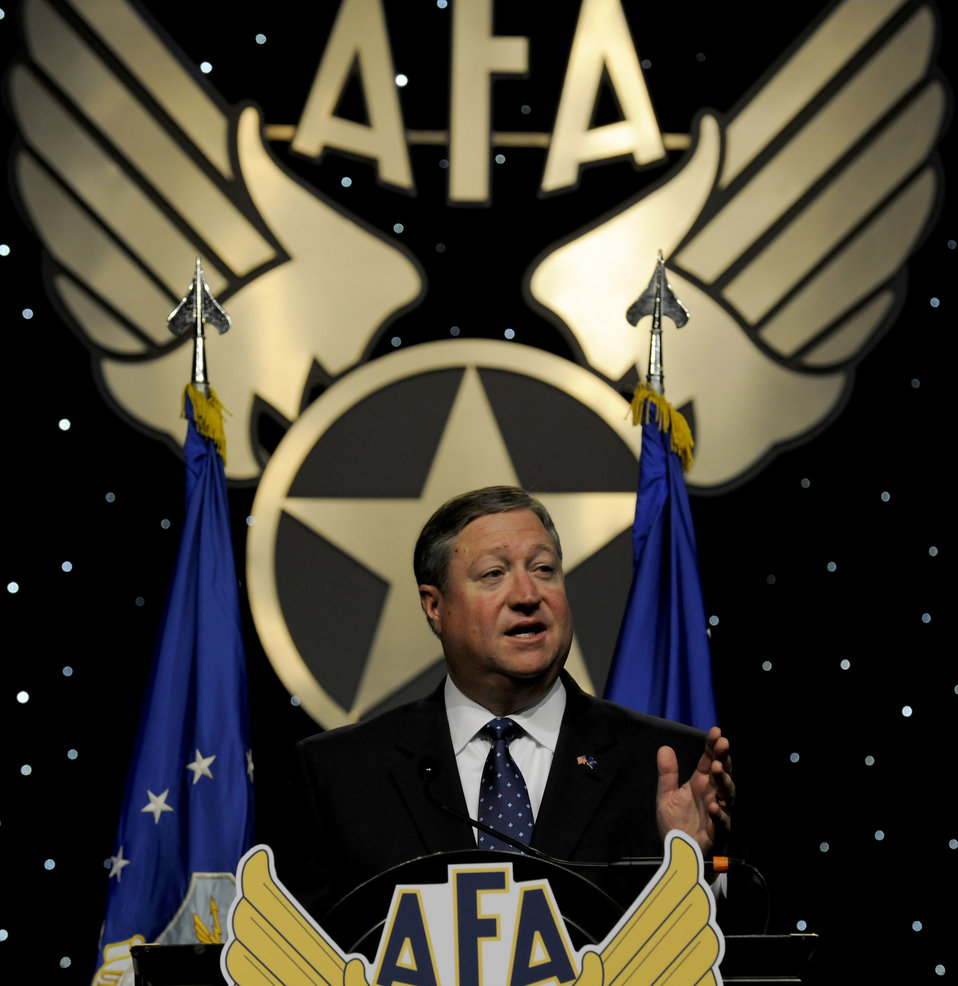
SecAF delivers

Secretary of the Air Force Michael Donley delivers a